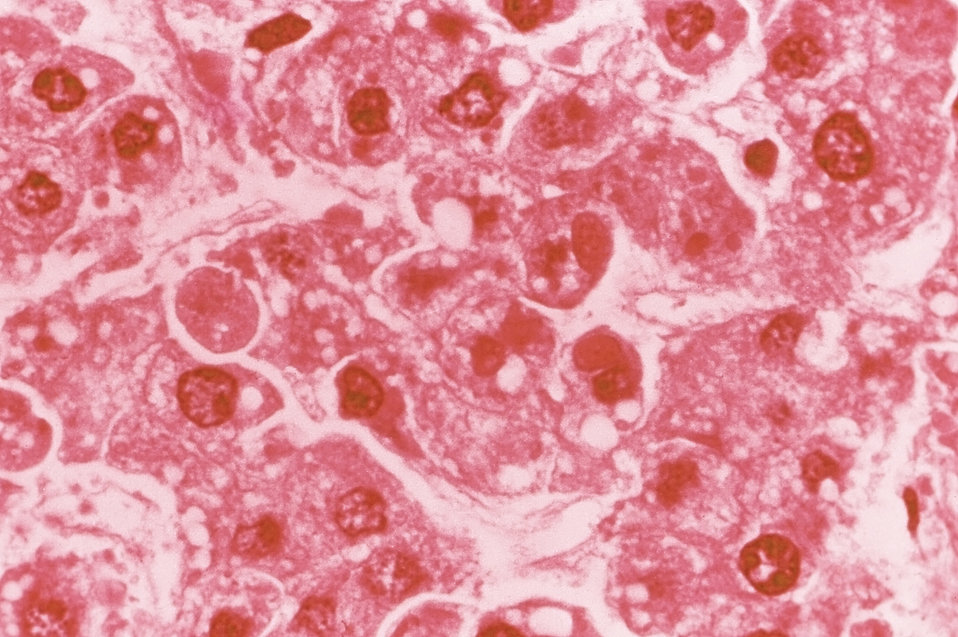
Under a high magnification of 400X, this hematoxylin-eosin-stained (H&E) photomicrograph depicts the cytoarchitectural changes found in a liver tissue specimen extracted from an Ebola disease patient in Zaire. This particular view reveals an 'acidophilic necrosis leading to the formation of a Councilman body, and cytoplasmic inclusions. A steatotic (fatty change) vesicle was caught in the process of formation.'